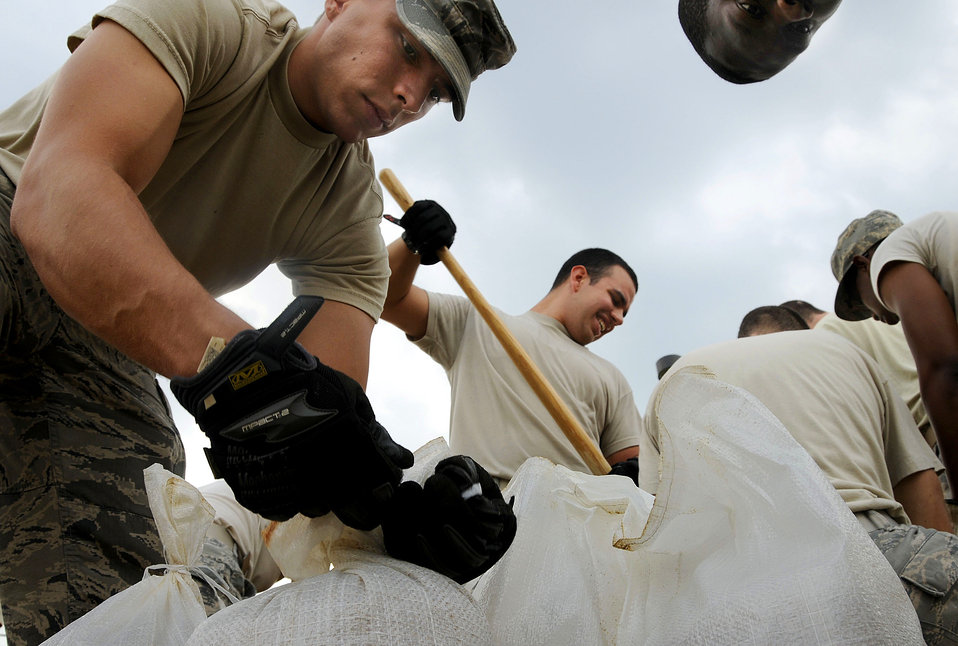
Preparing for the storm

Airmen fill sandbags Aug 25, 2011, in preparation for Hurricane Irene at Joint Base Anacostia-Bolling, Washington, D.C. The hurricane, which was a Category 1 storm by the time it hit the East Coast, brought heavy winds and flooding.